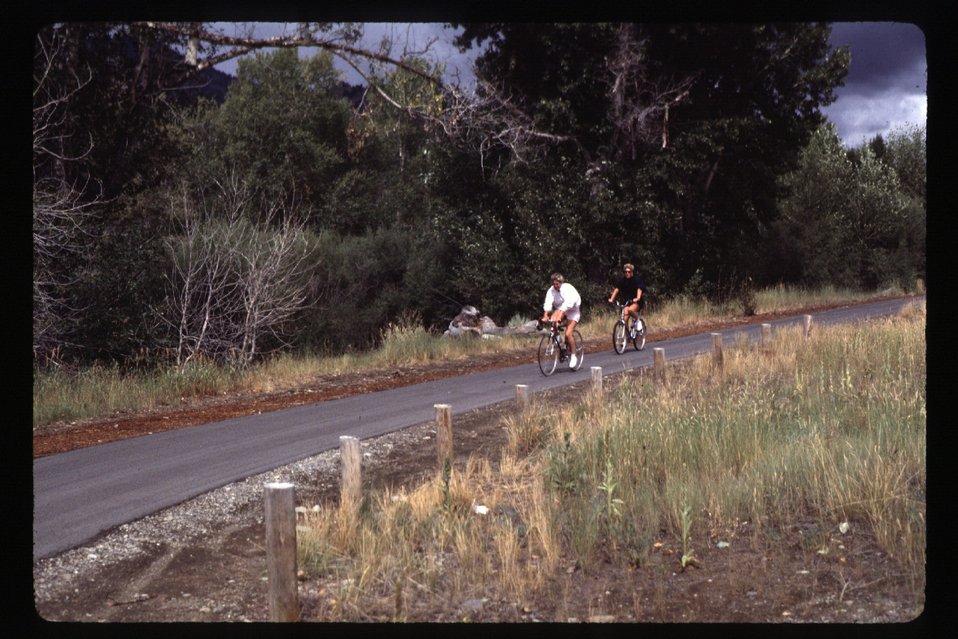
Sun Valley Bike and jog path Recreation Scenic Biker Shoshone Field Office USRD Upper Snake River District